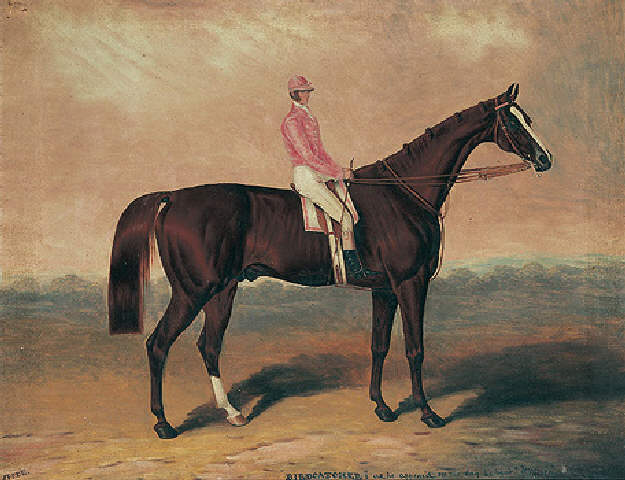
'Birdcatcher' with jockey up